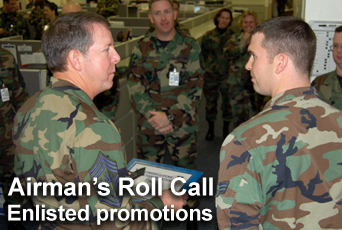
Airman's Roll Call: Enlisted promotion process

This week's Airman's Roll Call focuses on the enlisted promotion process, and key information on how Airmen can use to prepare for their next promotion.